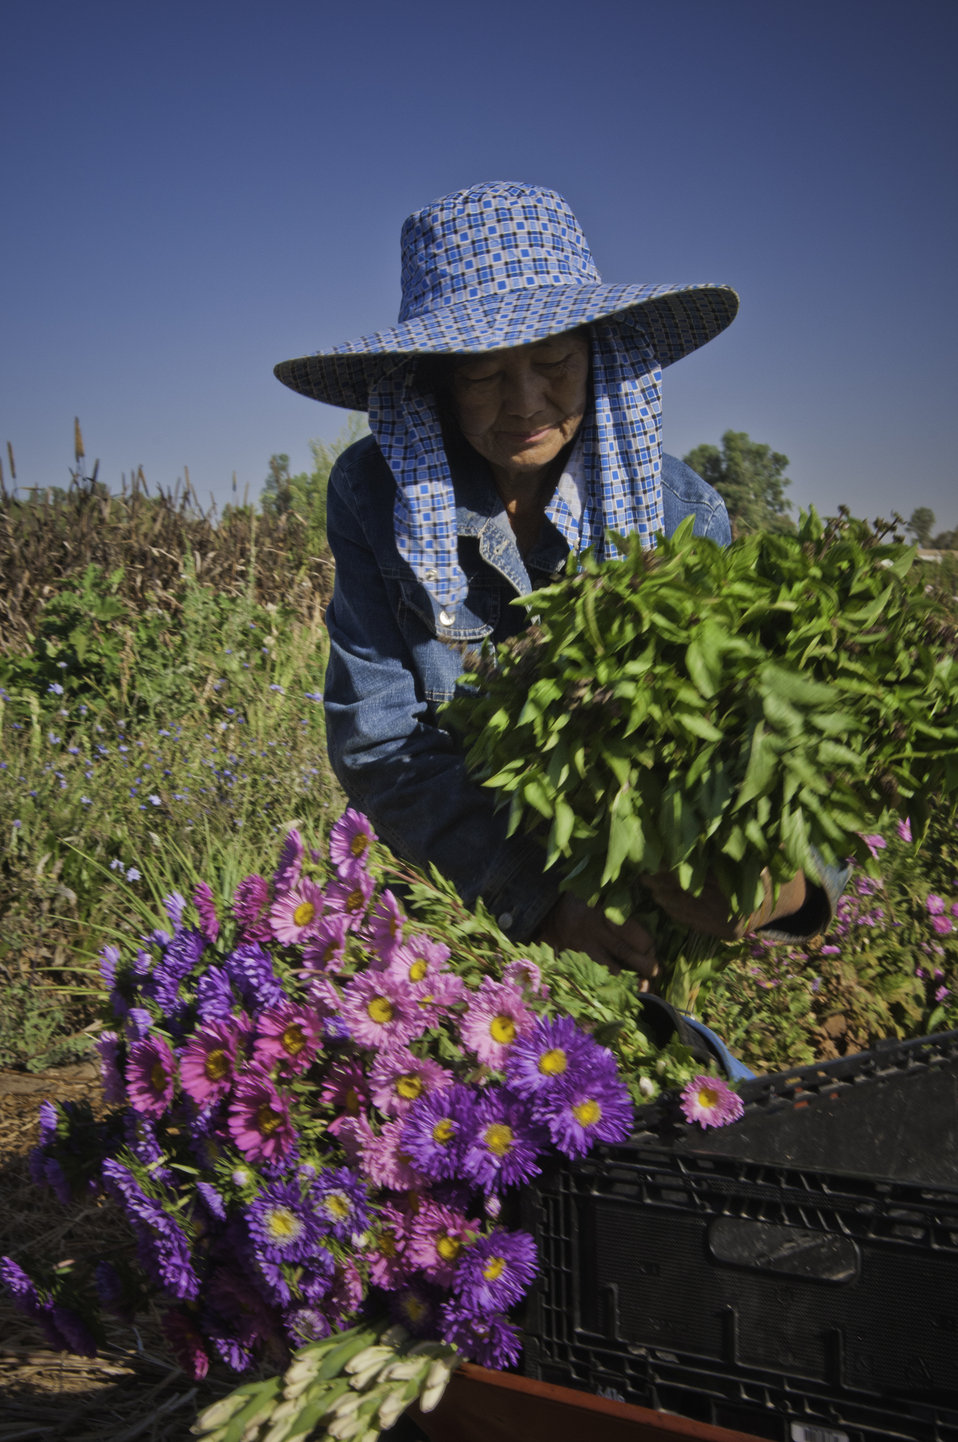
May Young Vu a Hmong farmer packing on a wheelbarrow on her farm May's Flower's in Sanger, California May Young Vu a Moung farmer taking opo squash harvested in the morning on her farm May's Flower's in Sanger, California to be packed for the farmers market in the afternoon on Thursday, August 29, 2013.